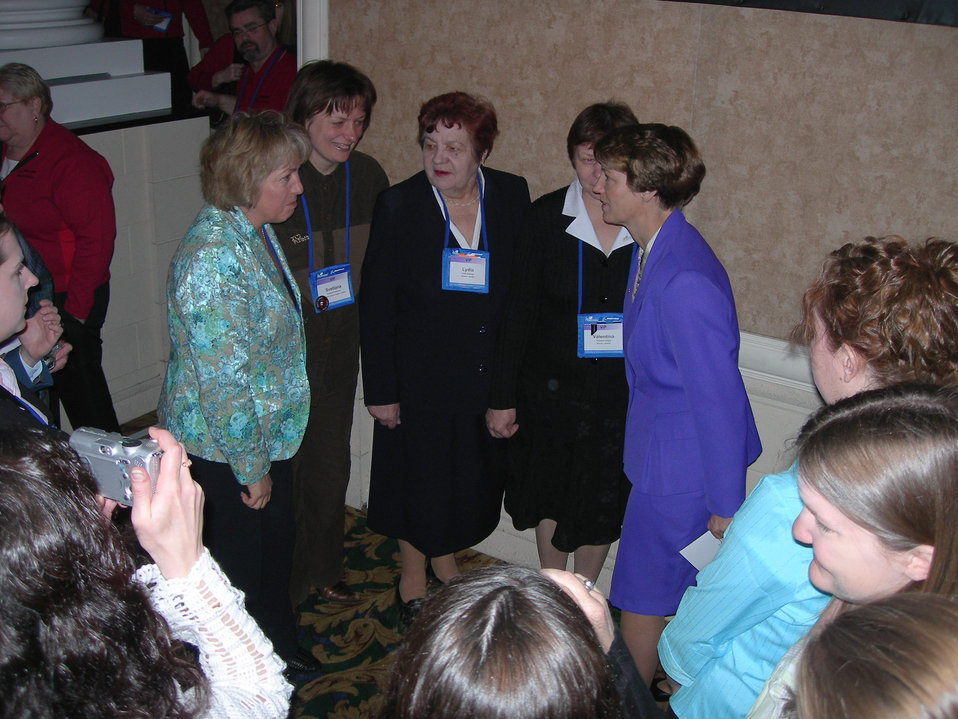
Life among the stars

Retired Air Force Col. Eileen Collins, right, talks with Russian pilots attending the 17th Annual International Women in Aviation Conference in Nashville, Tenn., on Saturday, March 25, 2006.